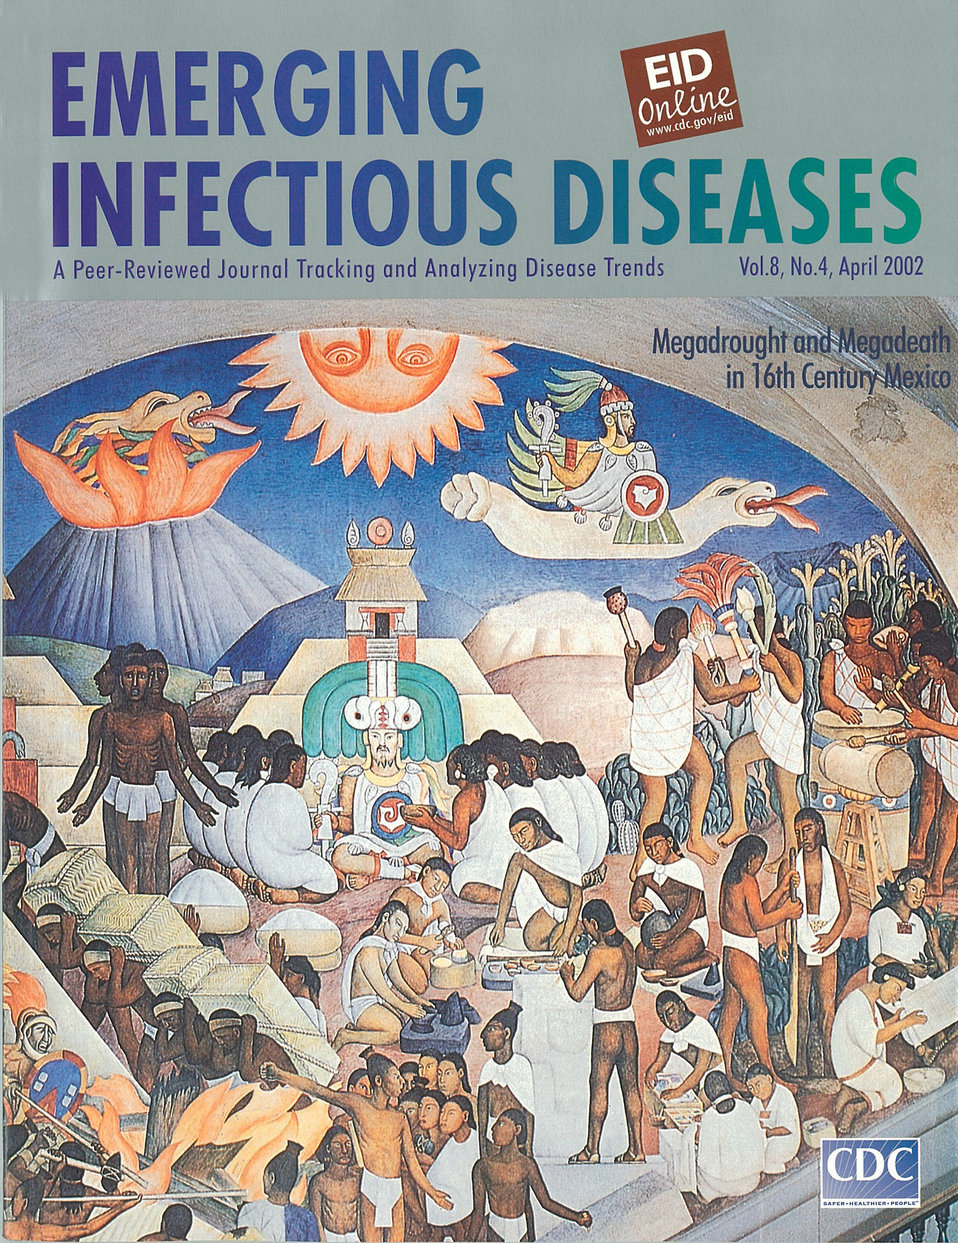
Emerging Infectious Diseases (EID) cover artwork for Volume 8, Number 4, April 2002 issue.